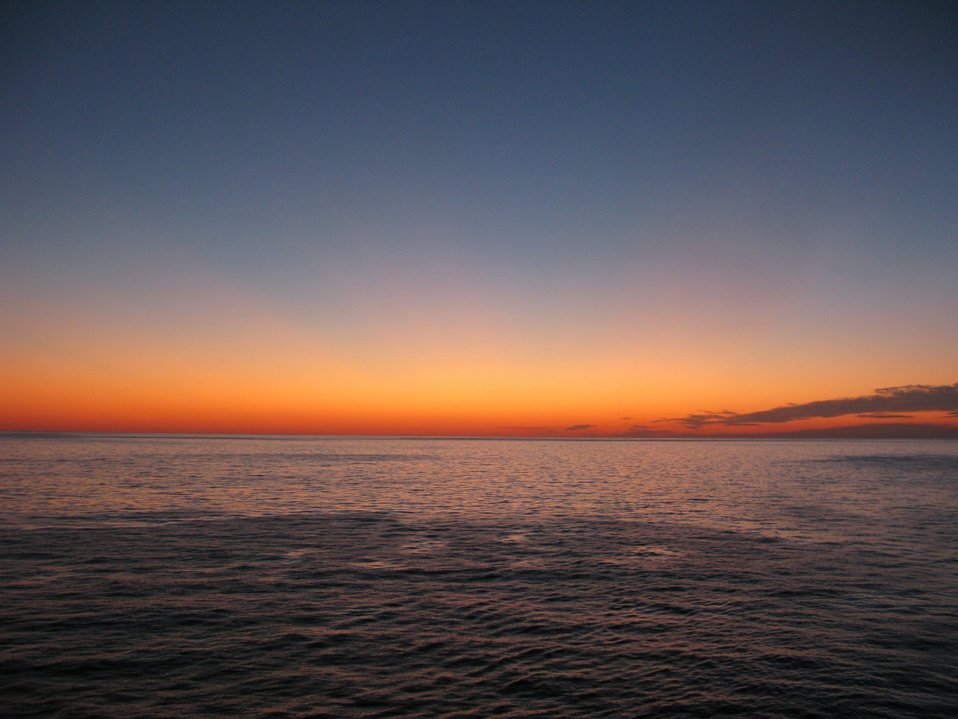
Sunset over the Gulf of Mexico